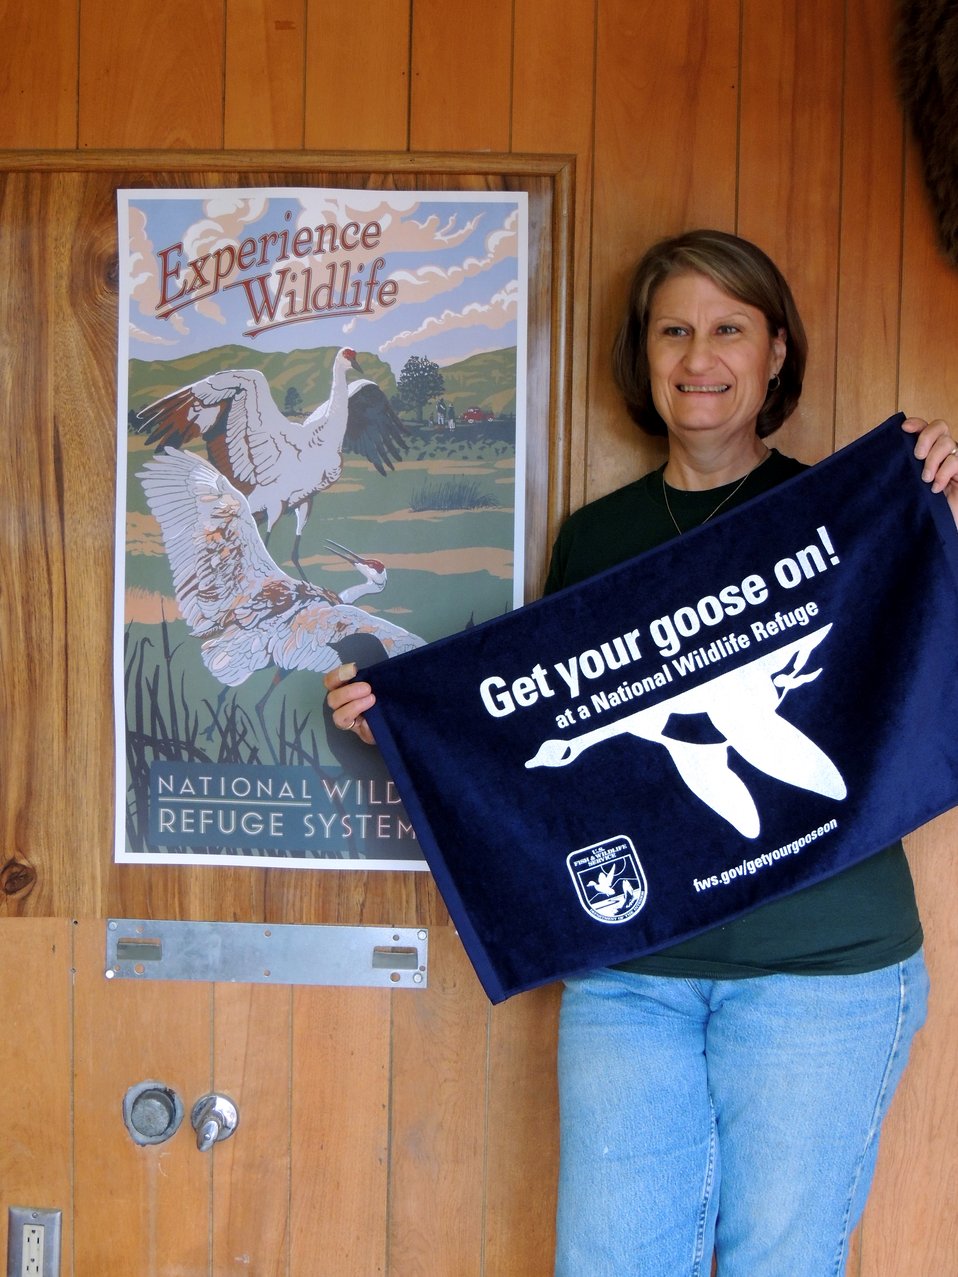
Get Your Goose On!

Wichita Mountains National Wildlife Refuge in Oklahoma.